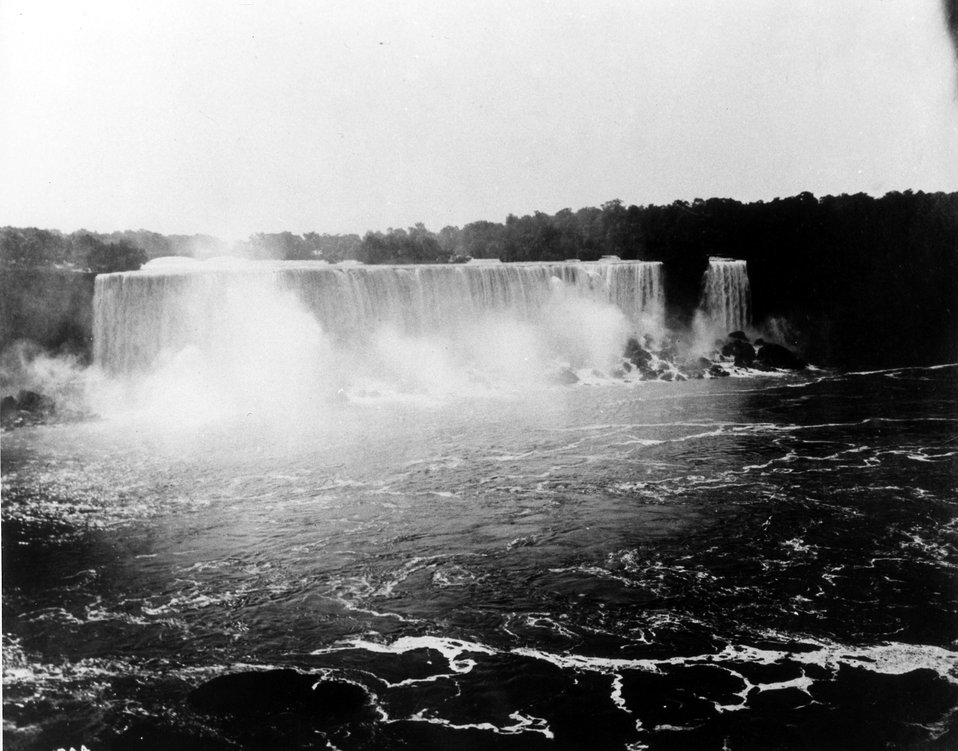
Niagara Falls